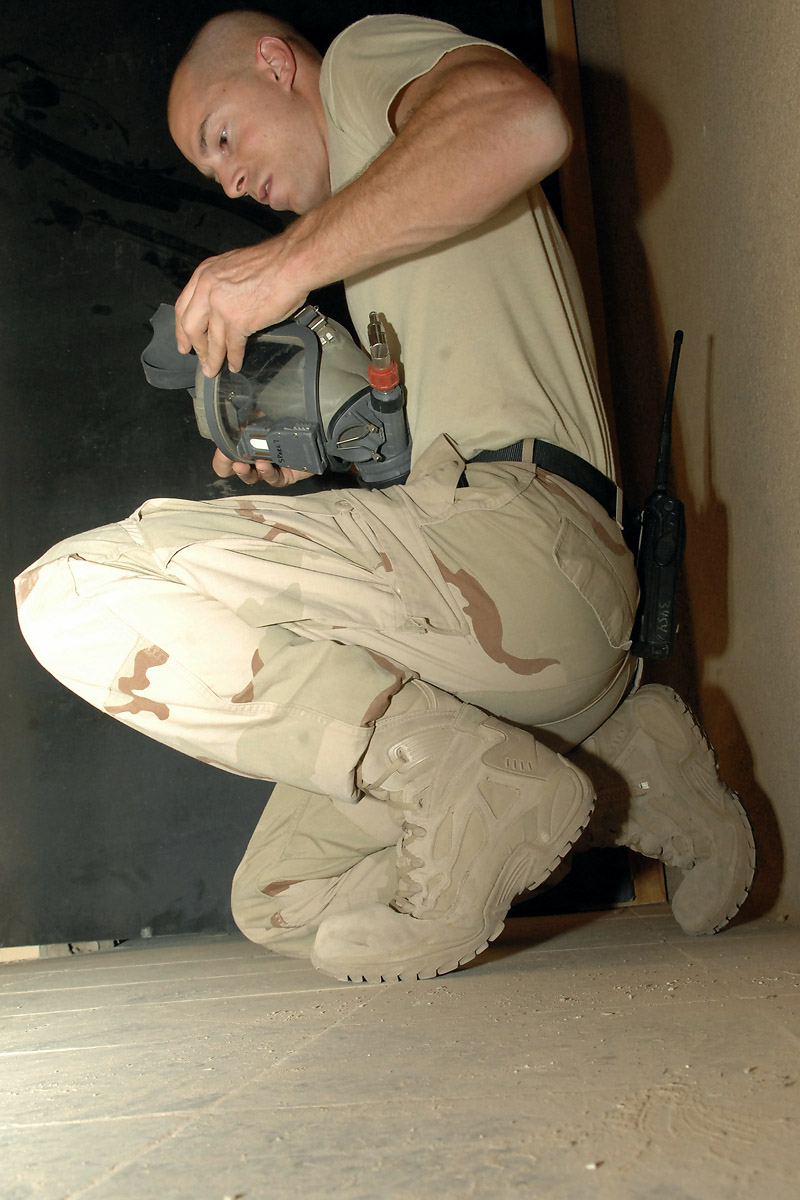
New training structure benefits Iraqi firefighters

Staff Sgt. Craig Cusenz checks the exhalation valve in a self contained breathing apparatus to make sure it's not stuck during combined American and Iraqi firefighter training July 30 at Kirkuk Regional Air Base, Iraq. Firefighters with the 506th Expeditionary Civil Engineer Squadron here facilitated the training to teach Iraqi firefighters how to rescue victims trapped inside a burning building. Sergeant Cusenz, a firefighter with the 506th ECES, is deployed from Tinker Air Force Base, Okla.